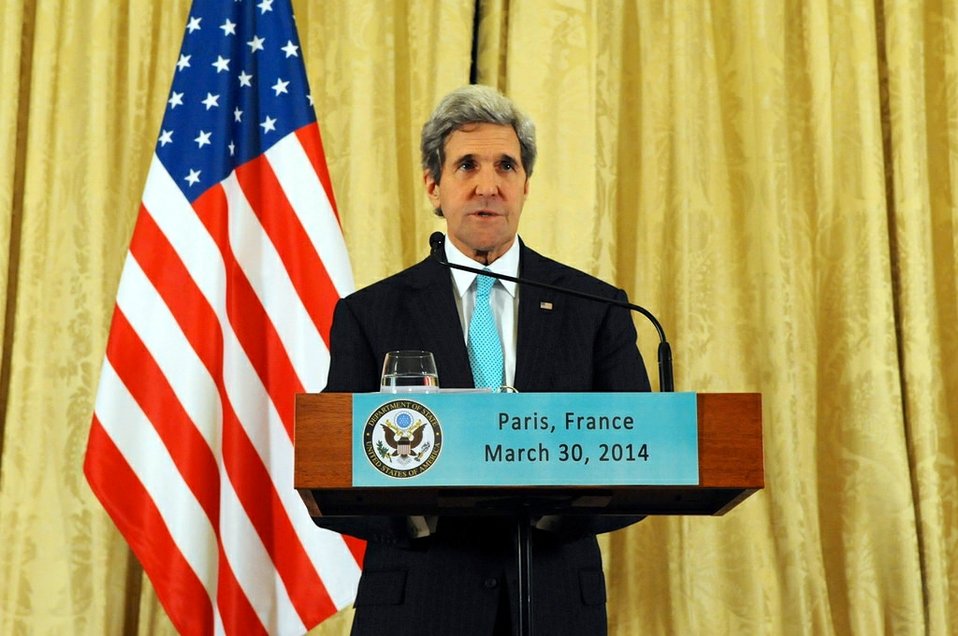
Secretary Kerry Addresses Reporters About Meeting With Russian Foreign Minister Lavrov

U.S. Secretary of State John Kerry addresses reporters after meeting with Russian Foreign Minister Sergey Lavrov in Paris, France, on March 30, 2014, to discuss Ukraine.